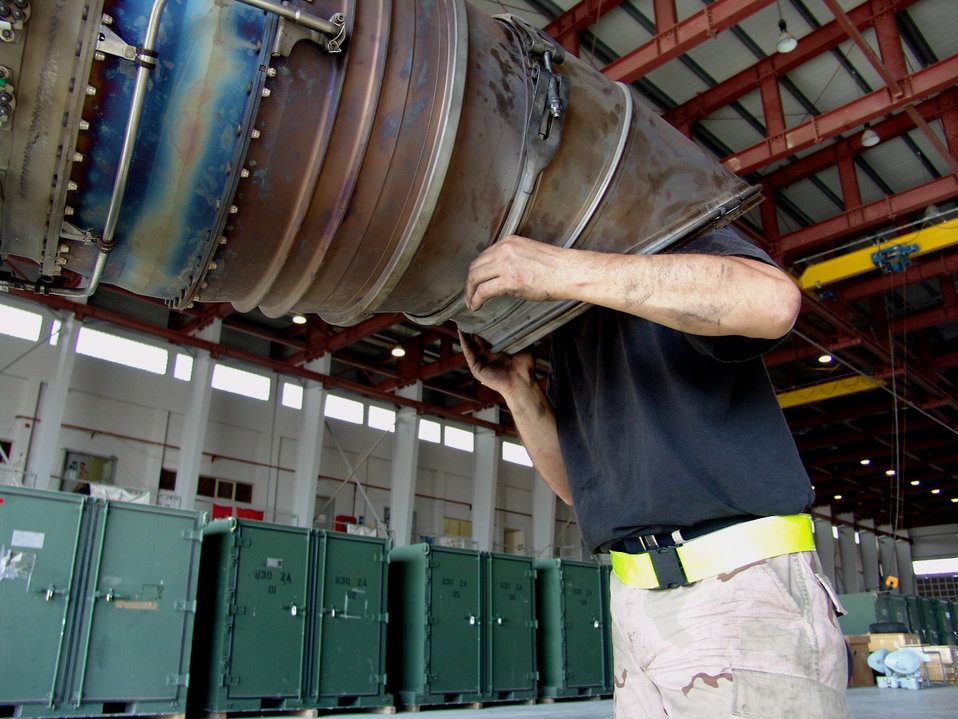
Hello in there

SOUTHWEST ASIA (AFPN) - Tech. Sgt. Andres Herran checks the inside of a C-130 Hercules engine during an engine swap-out at a deployed location. He is assigned to the 746th Expeditionary Maintenance Squadron. The squadron is part of the 386th Air Expeditionary Wing and responsible for all maintenance on its C-130s, from avionics to engines and everything in between.